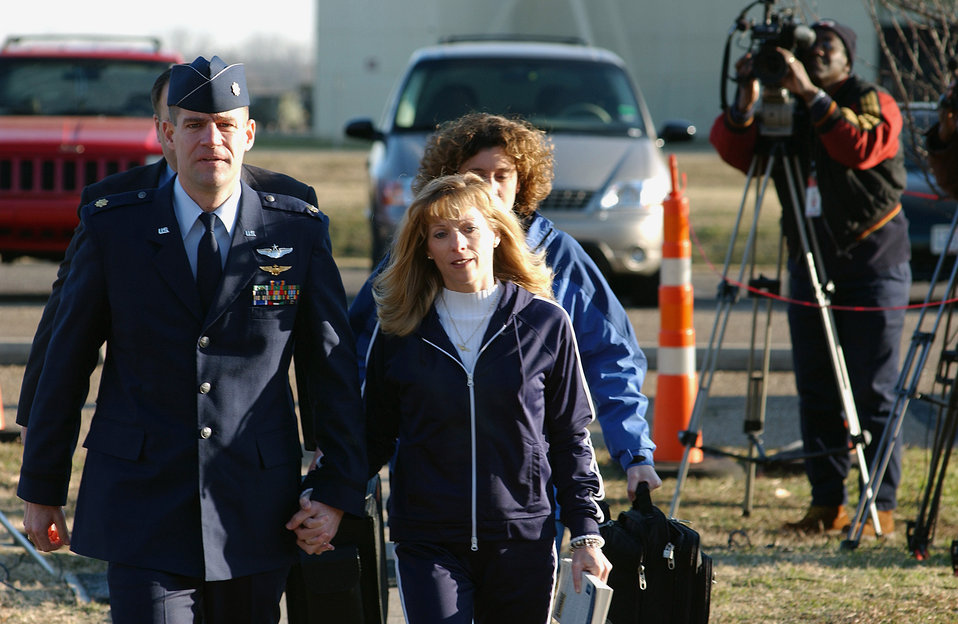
Article 32 hearing

BARKSDALE AIR FORCE BASE, La. -- Maj. Harry Schmidt and wife Lisa enter the Tarnak Farms Article 32 hearing room here. Maj. William Umbach and Schmidt were involved in the April 17, 2002 bombing incident that killed four Canadian soldiers and injured eight near Kandahar, Afghanistan.